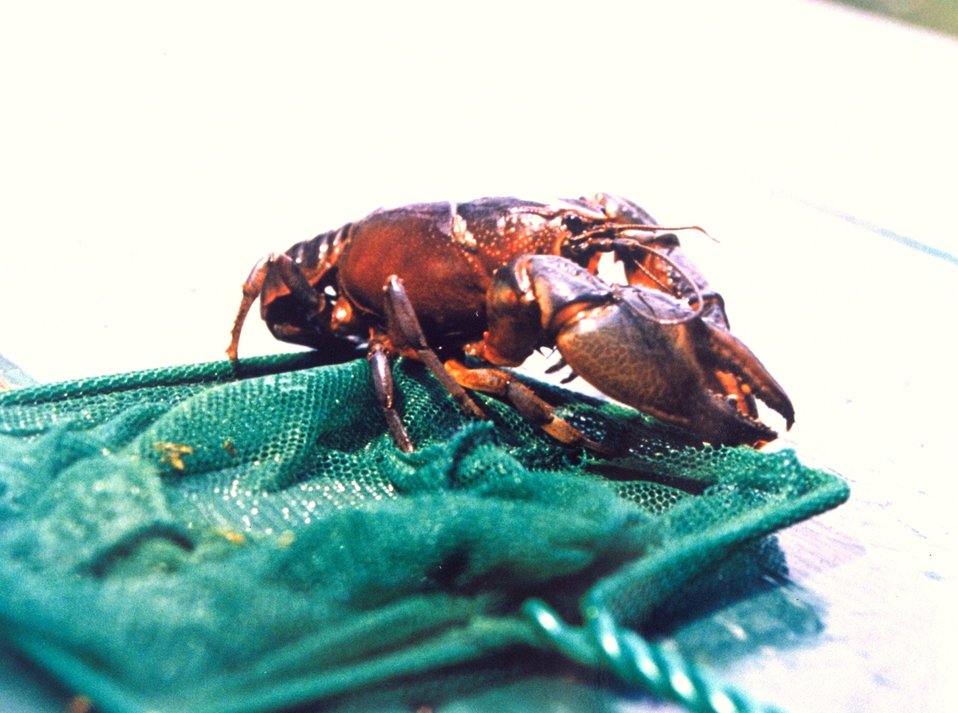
Crayfish found in a salt water pond near the Patuxent River.